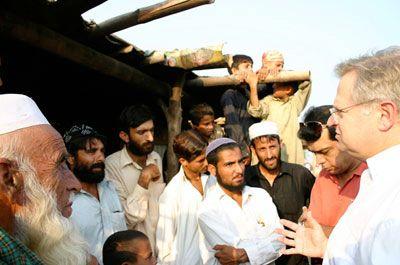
Assistant Secretary Schwartz Tours the Jalozai Internally Displaced Persons Camp

U.S. Assistant Secretary of State for Population, Refugees, and Migration Eric Schwartz tours the Jalozai Internally Displaced Persons camp for conflict-affected Pakistanis on October 9, 2010, near Peshawar, Pakistan. Assistant Secretary Schwartz traveled to Pakistan from October 8-10, 2010. There, he discussed with Pakistani Interior Minister Rehman Malik issues relating to Afghan refugees, some 1.6 million of whom are registered in Pakistan. He expressed the American people’s appreciation for Pakistan’s tolerance toward this community. He also announced an additional $1 million contribution to the Refugee Affected and Hosting Areas (RAHA) initiative, a joint Pakistan government/UN program that provides support both to the refugees and the Pakistani communities that host them. While in Pakistan, he also visited the Jalozai camp near Peshawar, which hosts approximately 97,000 Pakistanis who have been displaced by conflict. The United States has provided over $280 million in assistance to this group of vulnerable Pakistanis in 2010.